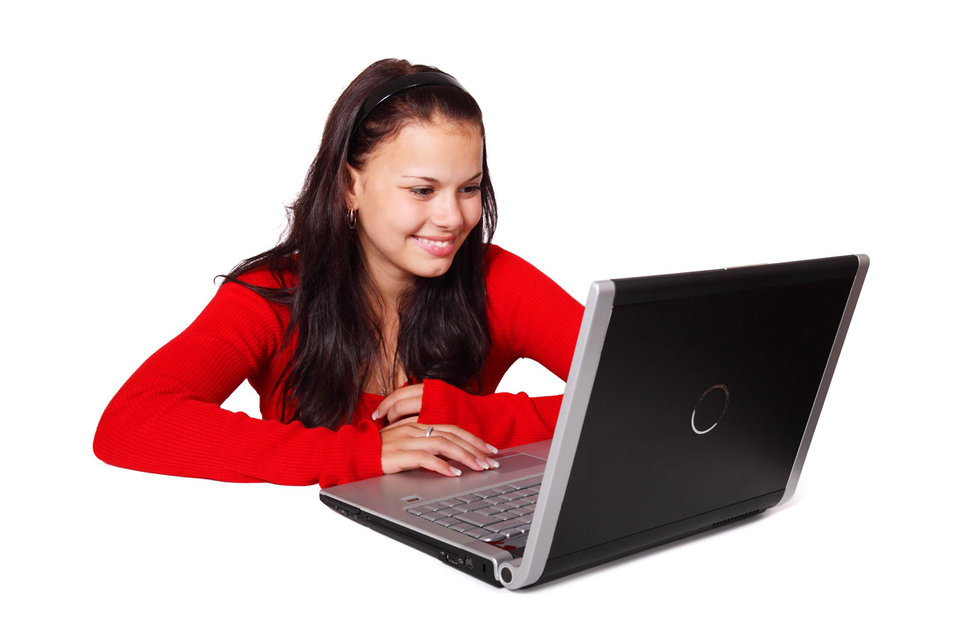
Woman behind laptop

Young woman browsing on internet.